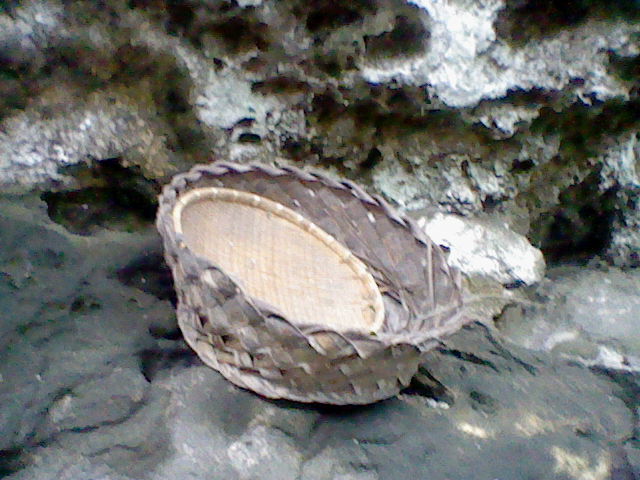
Camp Shutterbug 2011 prize winner

Guam National Wildlife Refuge, Pacific Islands
Photo: Amara Salgado, age 6
Third place, Culture
These baskets, made of coconut palm fronds and Ak'gak (Pandanus tectorius) were used in a traditional blessing ceremony performed on the Refuge in 2009.